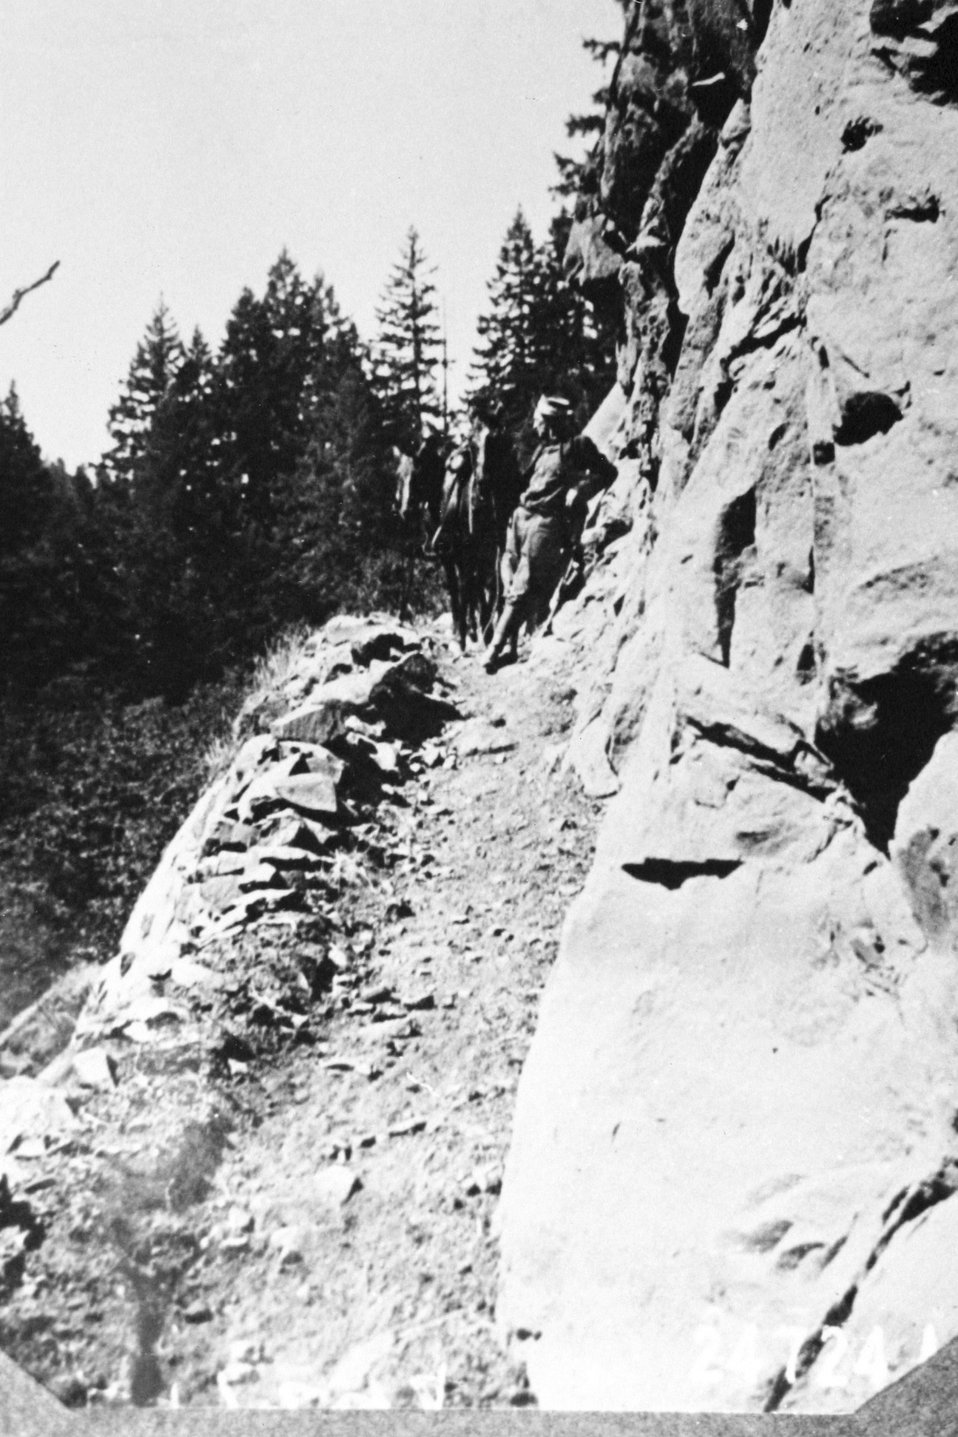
Rogue River Trail